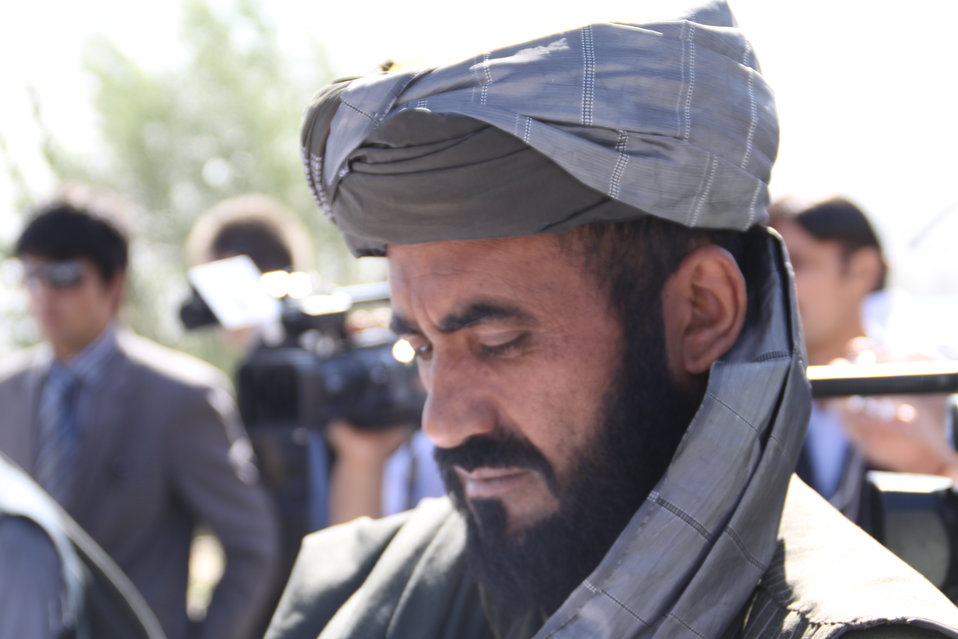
AVIPA Plus Wheat Seed Distribution 101005

US Ambassador Karl Eikenberry and USAID Acting Mission Director Kevin Brownawell joined the Minister of Agriculture, Irrigation and Livestock, H.E. Minister Mohammed Rahimi in signing a Memorandum of Understanding and distributing vouchers to area farmers for wheat and fertilizer.

US Ambassador Karl Eikenberry and USAID Acting Mission Director Kevin Brownawell joined the Minister of Agriculture, Irrigation and Livestock, H.E. Minister Mohammed Rahimi in signing a Memorandum of Understanding and distributing vouchers to area farmers for wheat and fertilizer.